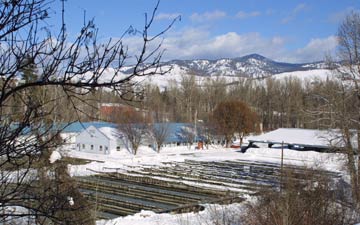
Winthrop National Fish Hatchery

An aerial view of Winthrop National Fish Hatchery in the winter.